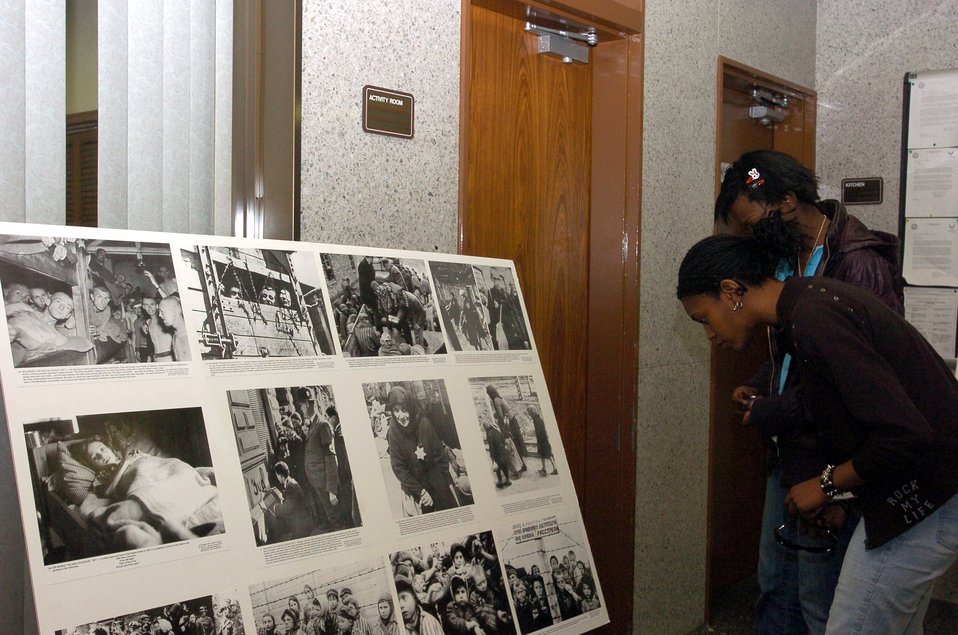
Yokota residents pay tribute to Holocaust victims

Guests at the Holocaust Remembrance Ceremony look at photo displays depicting some of the occurrences during that time period at Yokota Air Base's East Chapel April 20 in Japan. This year's celebration theme was